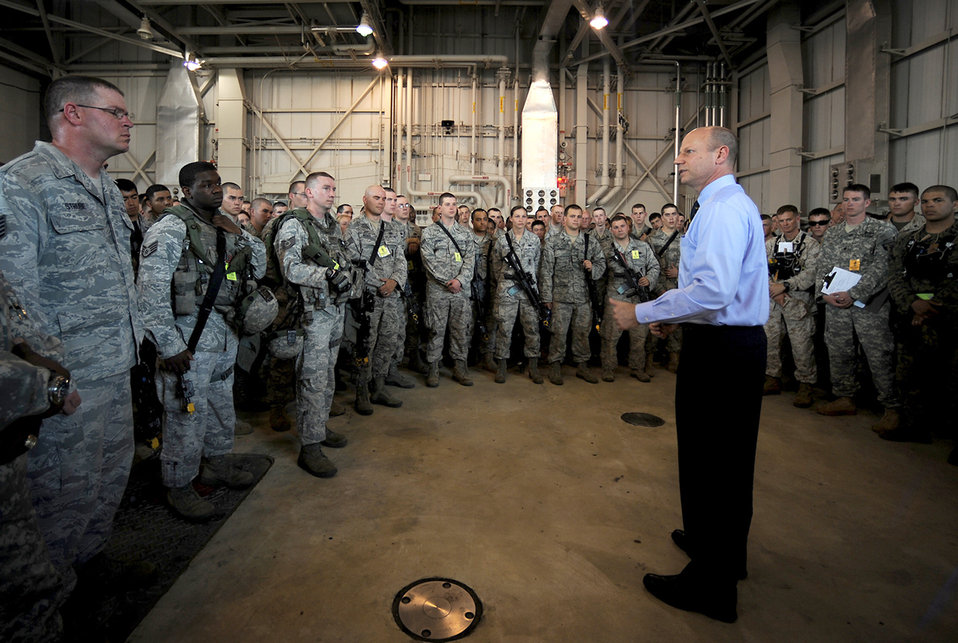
Assistant secretary of defense talks nuclear deterrence, treaties

Assistant Secretary of Defense for Nuclear, Biological and Chemical Defense Programs Andrew Weber visited Whiteman Air Force Base, Mo., May 9, 2011. During his visit, he met with Airmen, received a B-2 Spirit mission orientation and watched a portion of a security forces exercise.